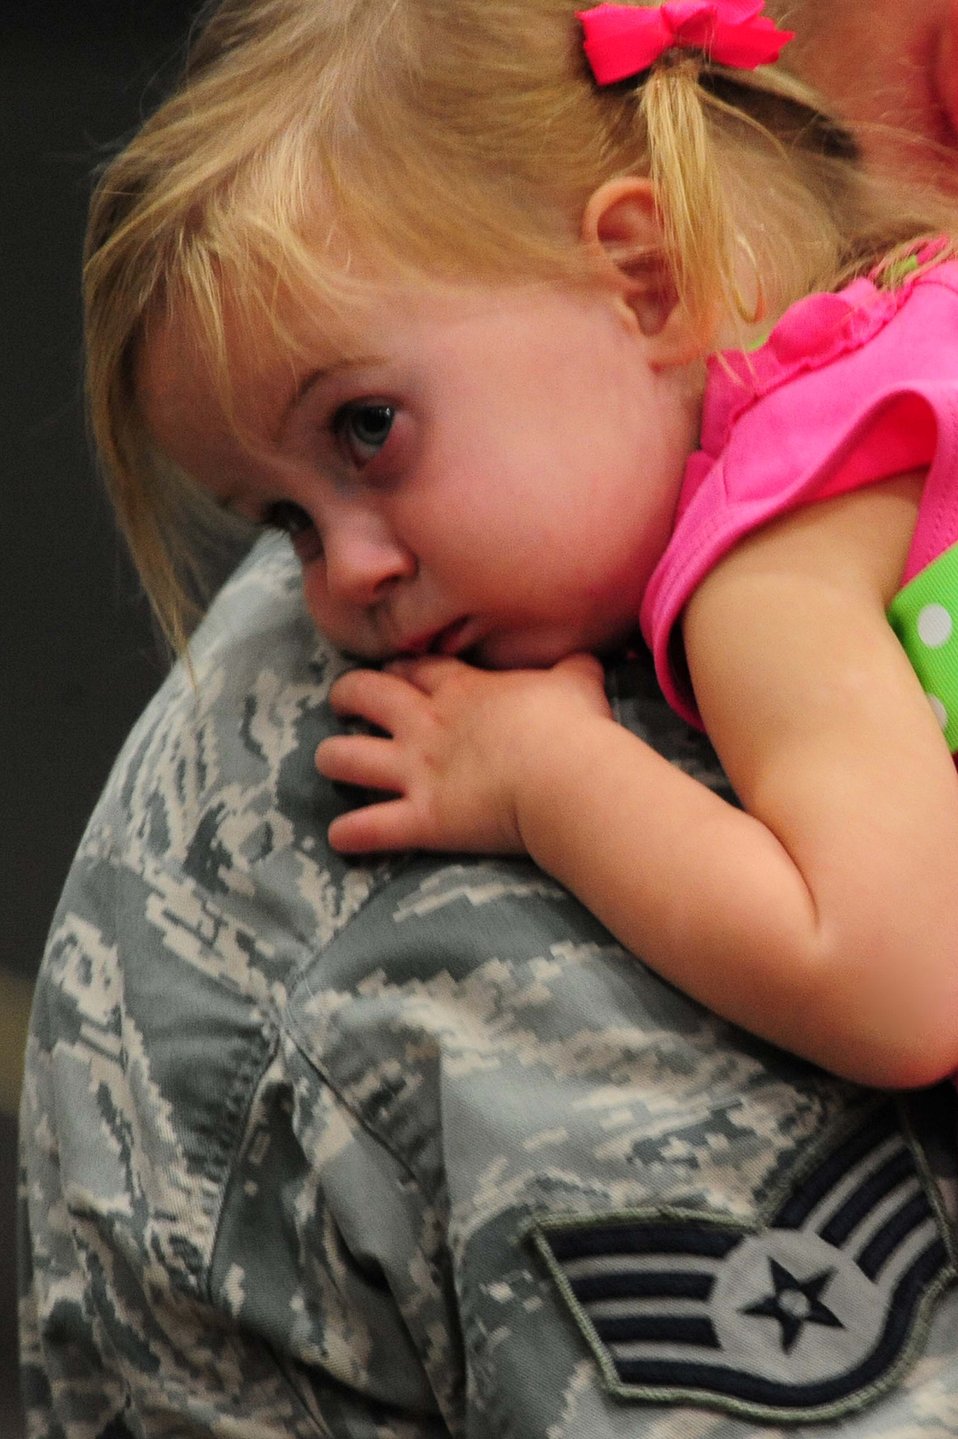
Welcome back

An Airman holds his daughter after returning from a deployment to Southwest Asia July 28, 2010, at Ellsworth Air Force Base, S.D. More than 350 Airmen serving in various roles deployed in support of Operations Iraqi and Enduring Freedom returned.